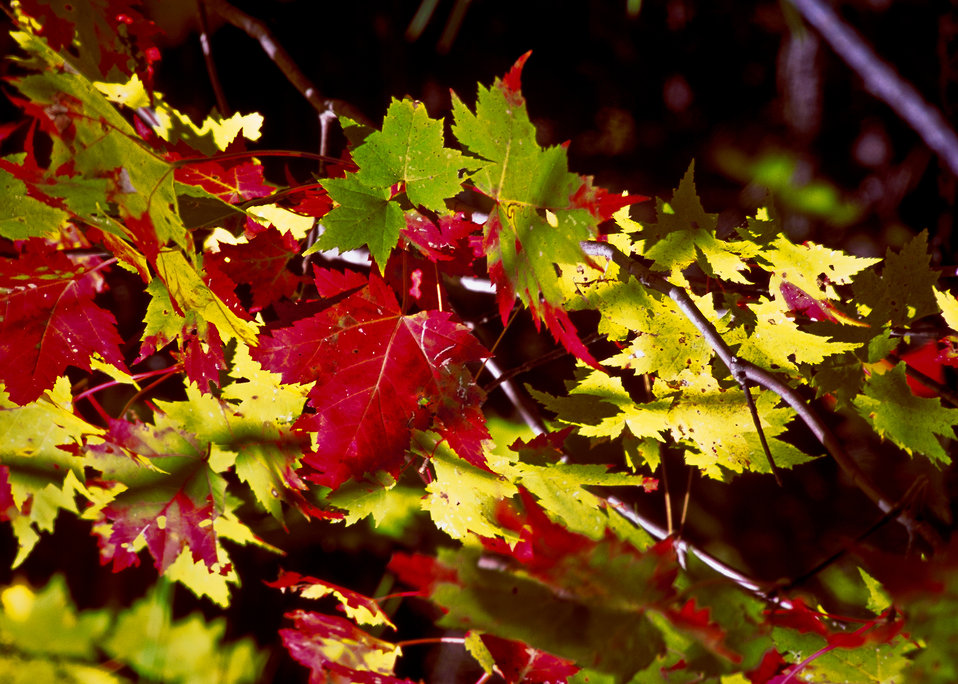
Maple leaves of many colors offer an unending palette of color in the Hiawatha National Forest on the Upper Peninsula of Michigan.